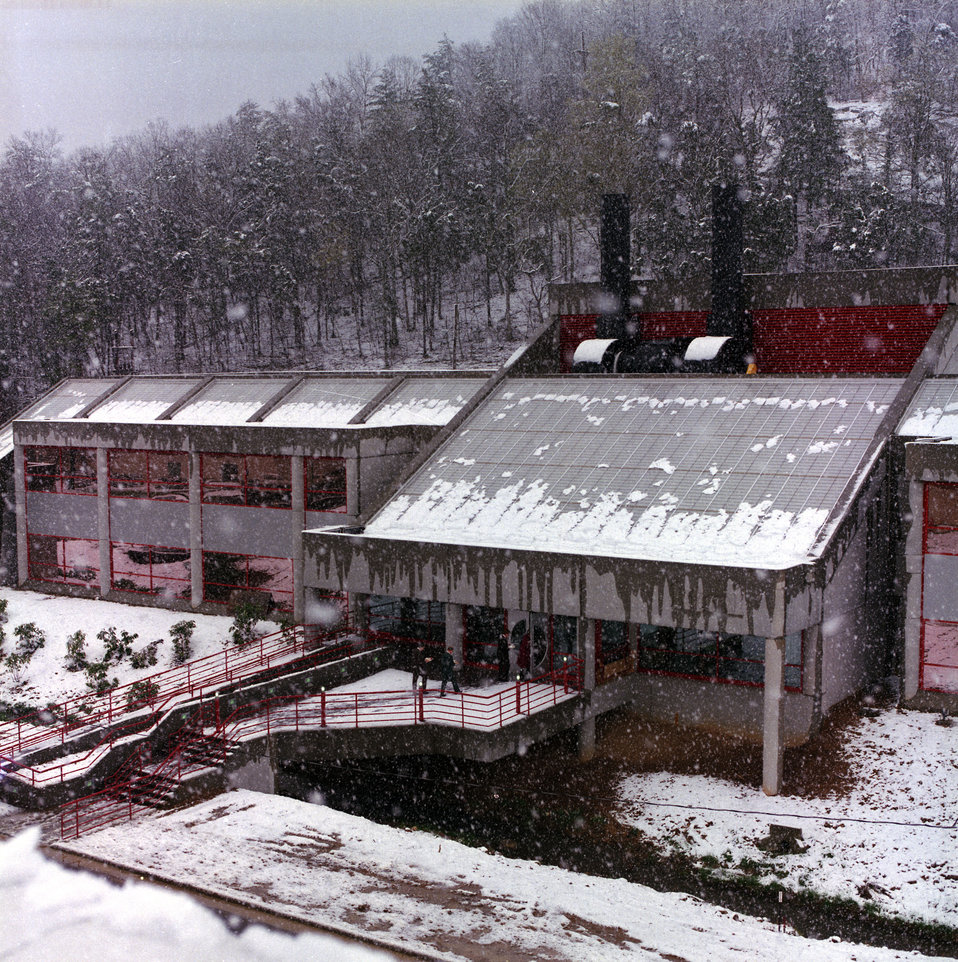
High Temperature Materials Laboratory (HTML) Oak Ridge

DOE photo by Lynn Freeny High Temperature Materials Laboratory (HTML) Oak Ridge National Lab April 1987